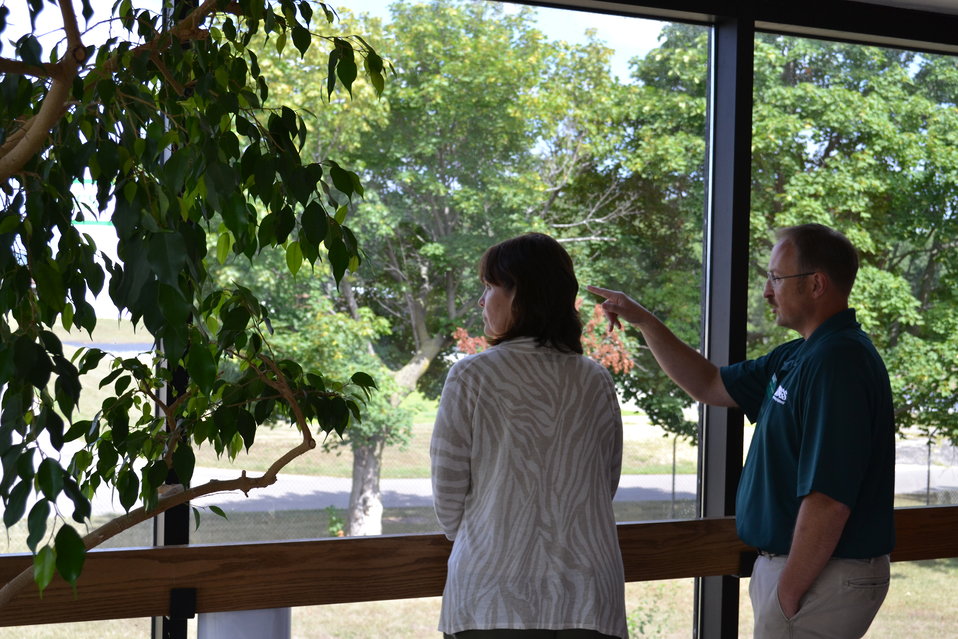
USGS research ponds

Mark Gaikowski, a research physiologist with the U.S. Geological Survey (USGS), points to the large research ponds at the Upper Midwest Environmental Sciences Center (UMESC). Rep. Betty McCollum (D-Minn.) looks on.